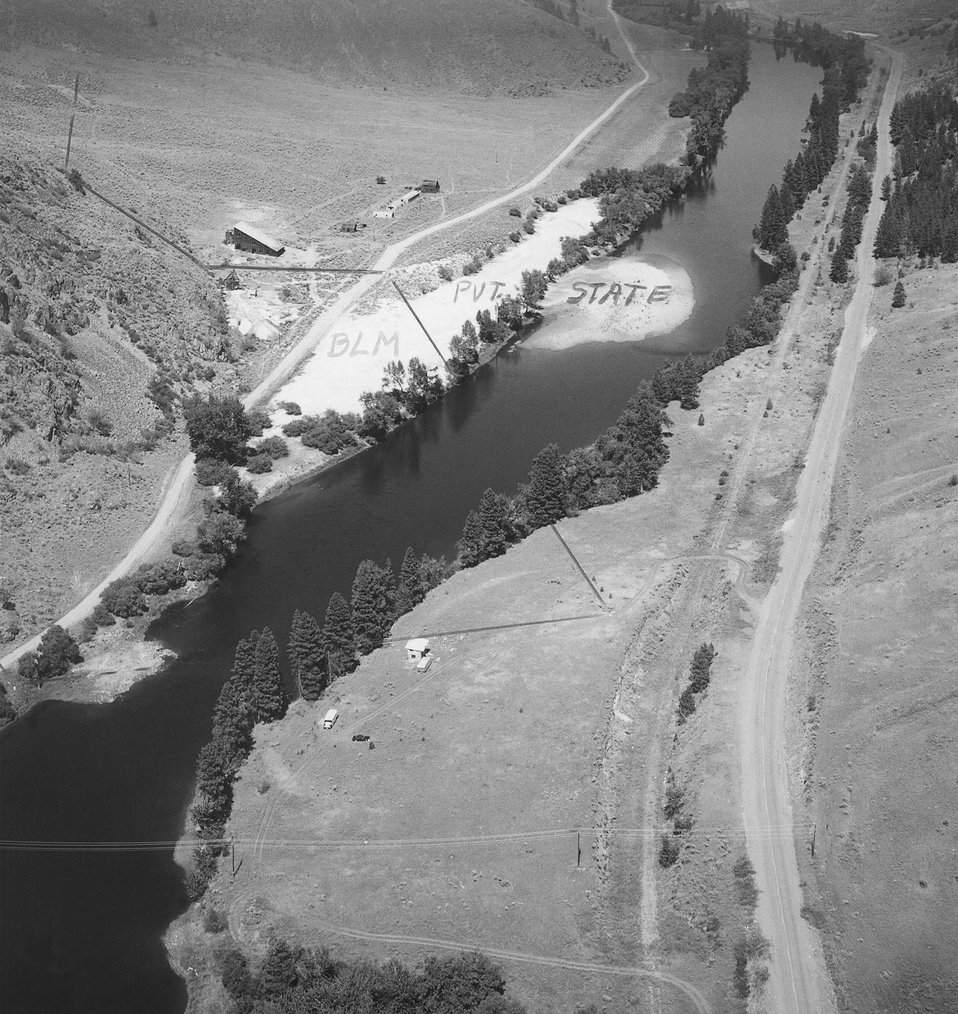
AML. Oblique Aerial view of Kaaba-Texas Mine.